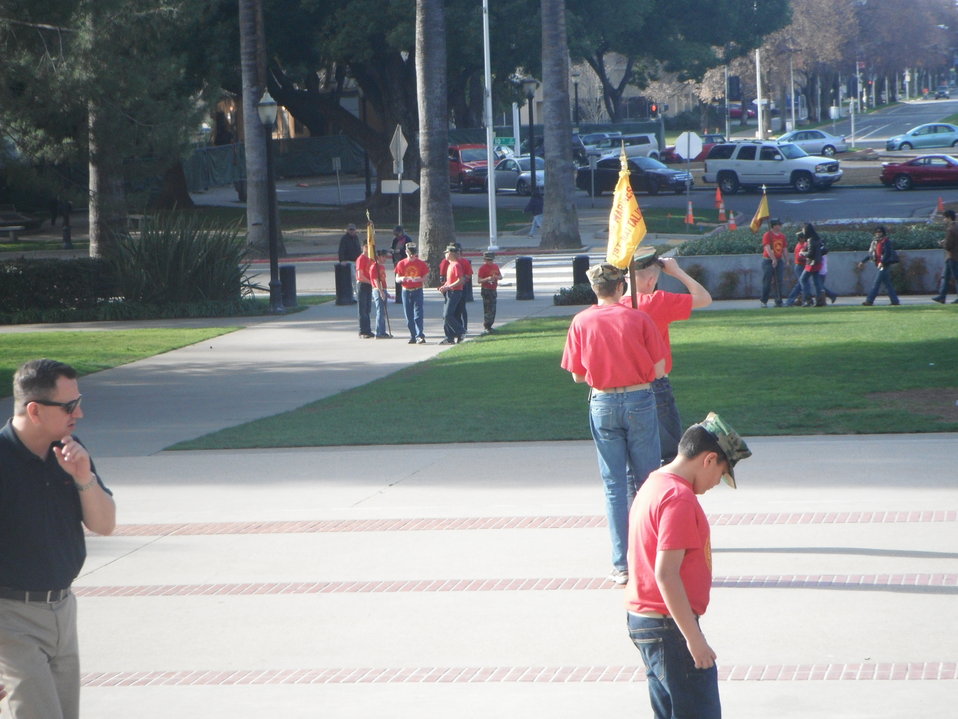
Ray Jacobs Young Marines, NDFW 2013

Sacramento, Ca. National Drug Facts Week Events, Feb. 2, 2013.